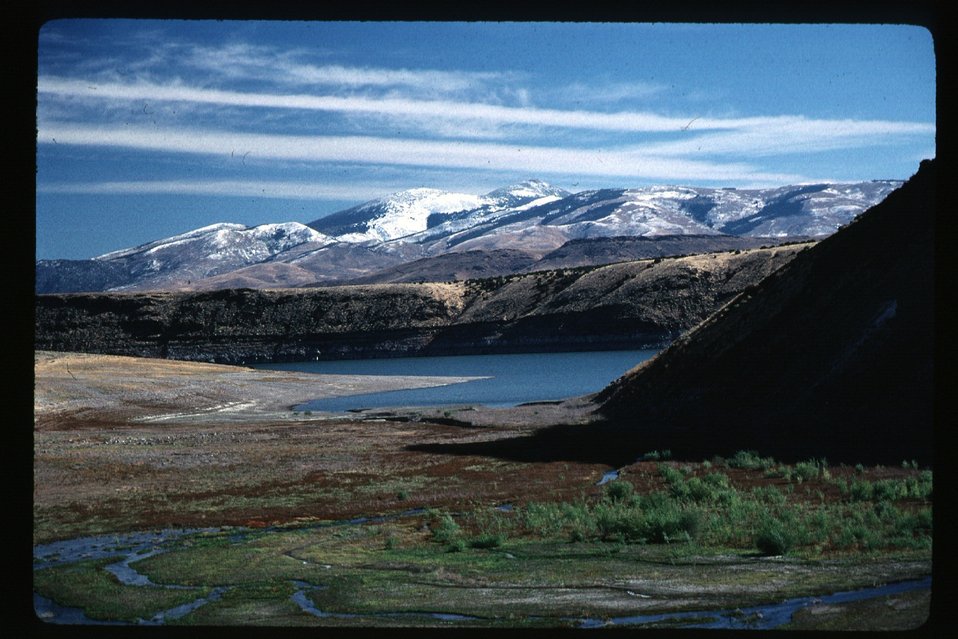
Lower Goose Creek Reservoir USRD Upper Snake River District